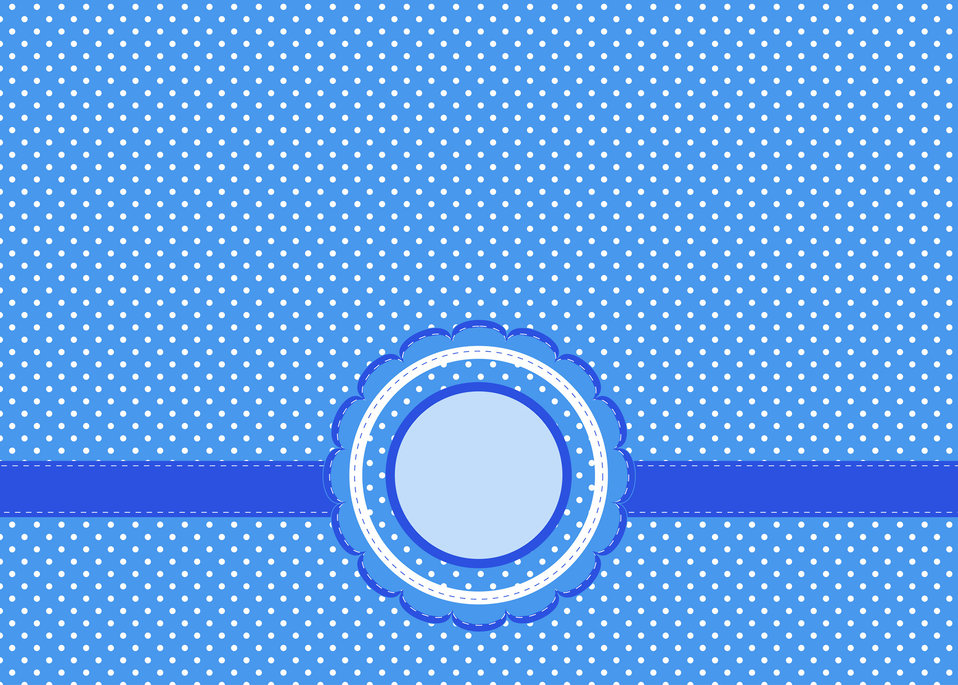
Blue polka dots background

Blue and white polka dots card with ribbon and rosette.